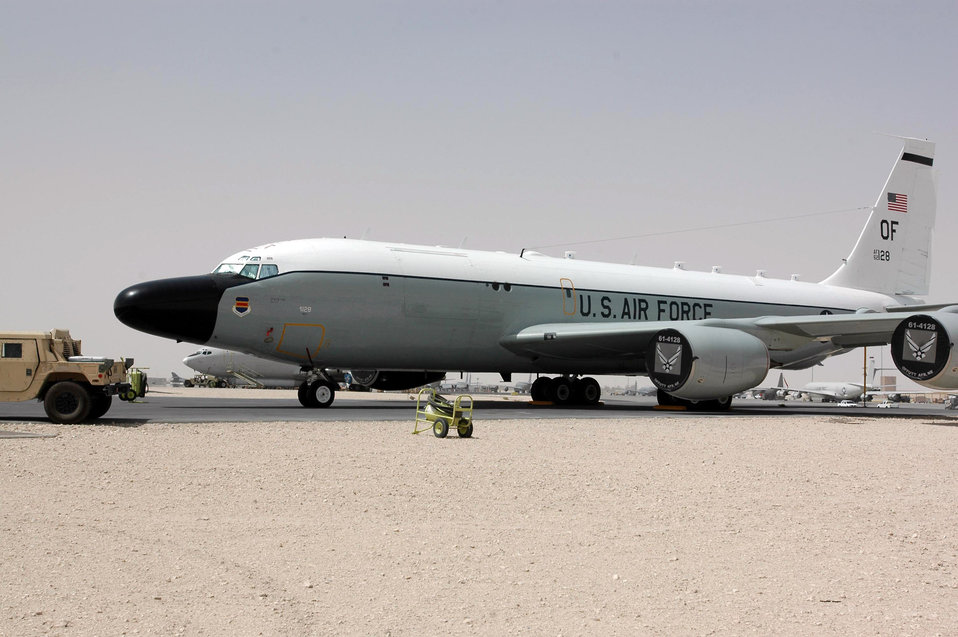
Air tactics evolve to achieve effects for war on terrorism

Airmen across U.S. Central Command Air Forces converged in Bahrain for the Weapons and Tactics Conference in July to discuss ways to use airpower and aircraft more effectively, including how to use the RC-135 Rivet Joint better. One of the areas examined was the flow of information between joint tactical attack controllers, weapons platforms like F-16 Fighting Falcons and B-1B Lancers, and intelligence, surveillance and reconnaissance aircraft.